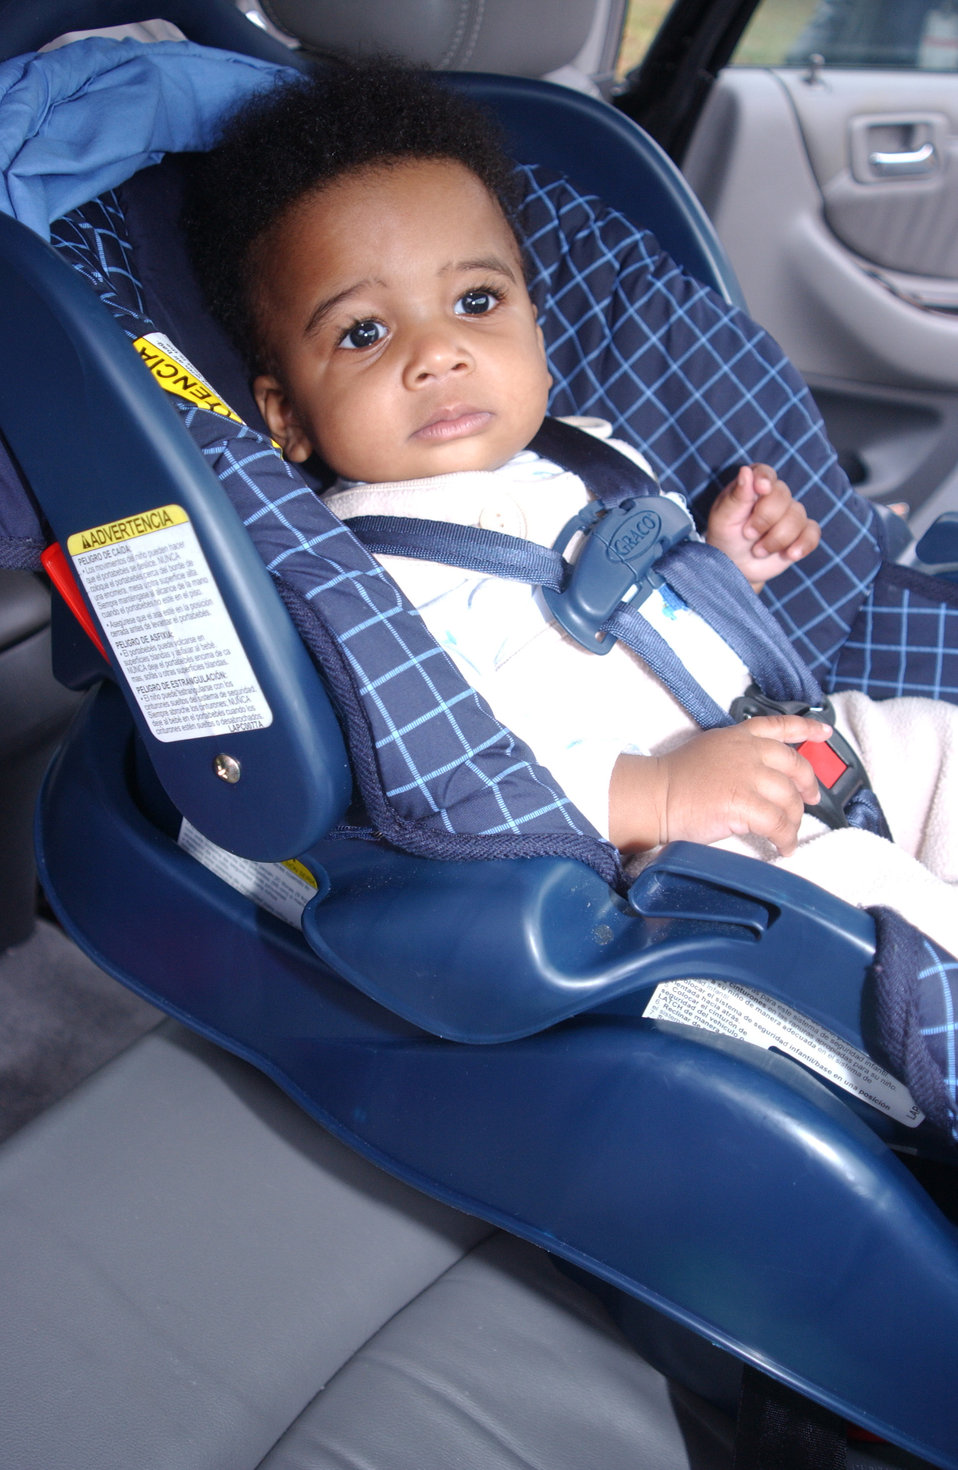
This 2004 photograph shows an infant who has been properly positioned, and buckled into a rear-facing infant-only car seat. For example, notice the harnesses are snug; the plastic harness clip is positioned at the armpit level in order to hold the shoulder straps in place; the straps are lying flat; the baby is dressed in clothes that allow the strap to go between the legs; and the child is not slouching down, or to the side.